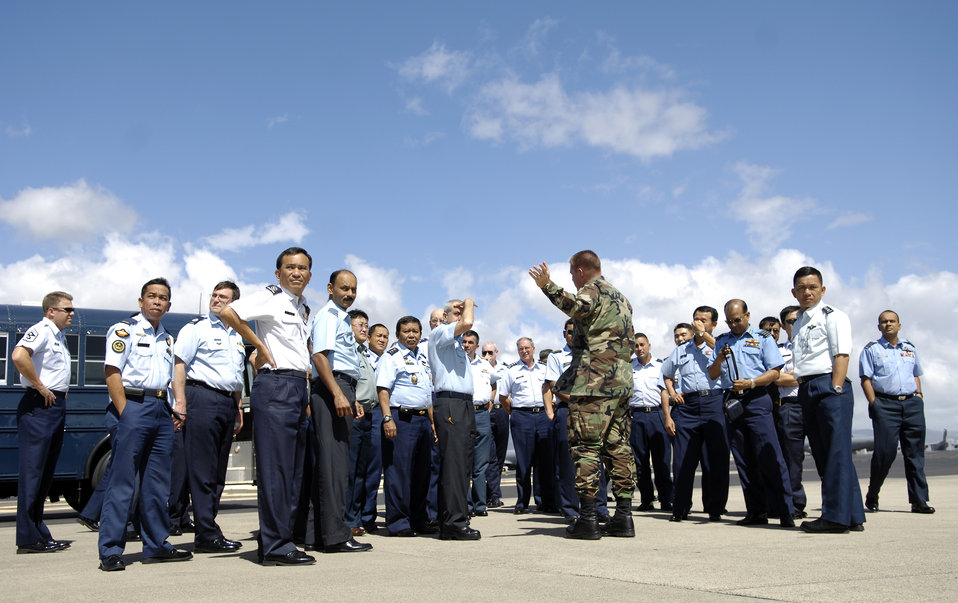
Pacific conference builds enlisted forces

Col. John Lipinski briefs members of the Pacific Rim Airpower Symposium on C-17 Globemaster III washing procedures, Sept. 20, at Hickam Air Force Base, Hawaii. The PACRIM Symposium provides an ideal forum to communicate the value of U.S. engagement with nations of the Asia-Pacific region and our commitment to the internal, local, national and regional audiences. Col. Lipinski is the 15th Airlift Wing Maintenance Group commander.